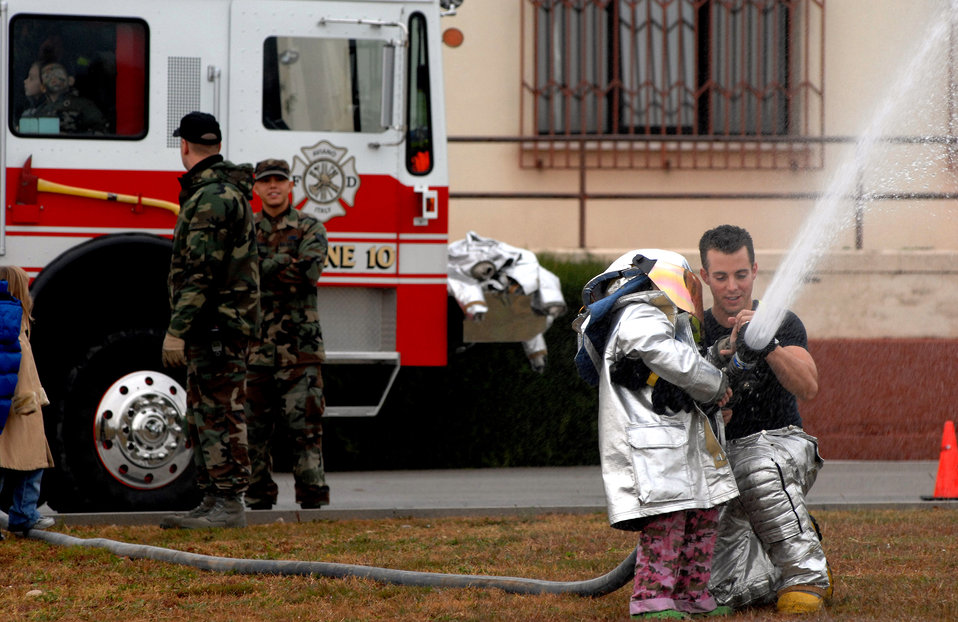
Warrior for a day

Airman 1st Class Christopher Gonzalez helps 2nd grader Alexa Arancubia use an attack hose during a children's deployment day Oct. 24 at Aviano Air Base, Italy. Alexa is the daughter of Tech. Sgt. Abel Arancubia and Jennifer Arancubia. Airman Gonzalez is a firefighter with the 31st Civil Engineer Squadron.